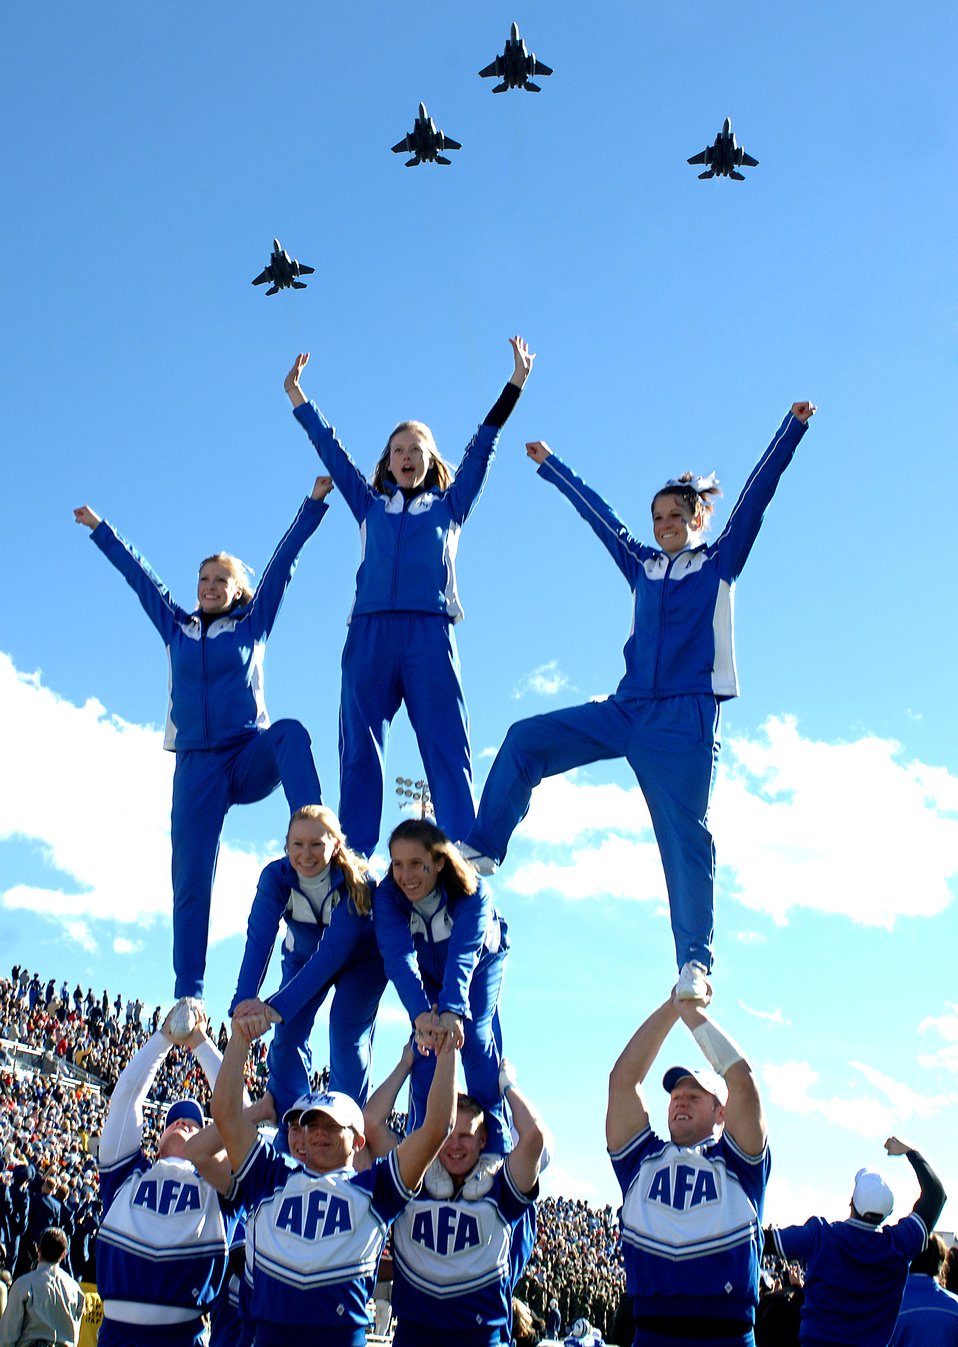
Army vs Air Force

U.S. AIR FORCE ACADEMY, Colo. (AFPN) -- Air Force cheerleaders go through their paces prior to the opening kickoff against Army, as a quartet of F-15E Strike Eagles from the 90th Fighter Squadron, Elmendorf Air Force Base, Alaska, perform a fly over.